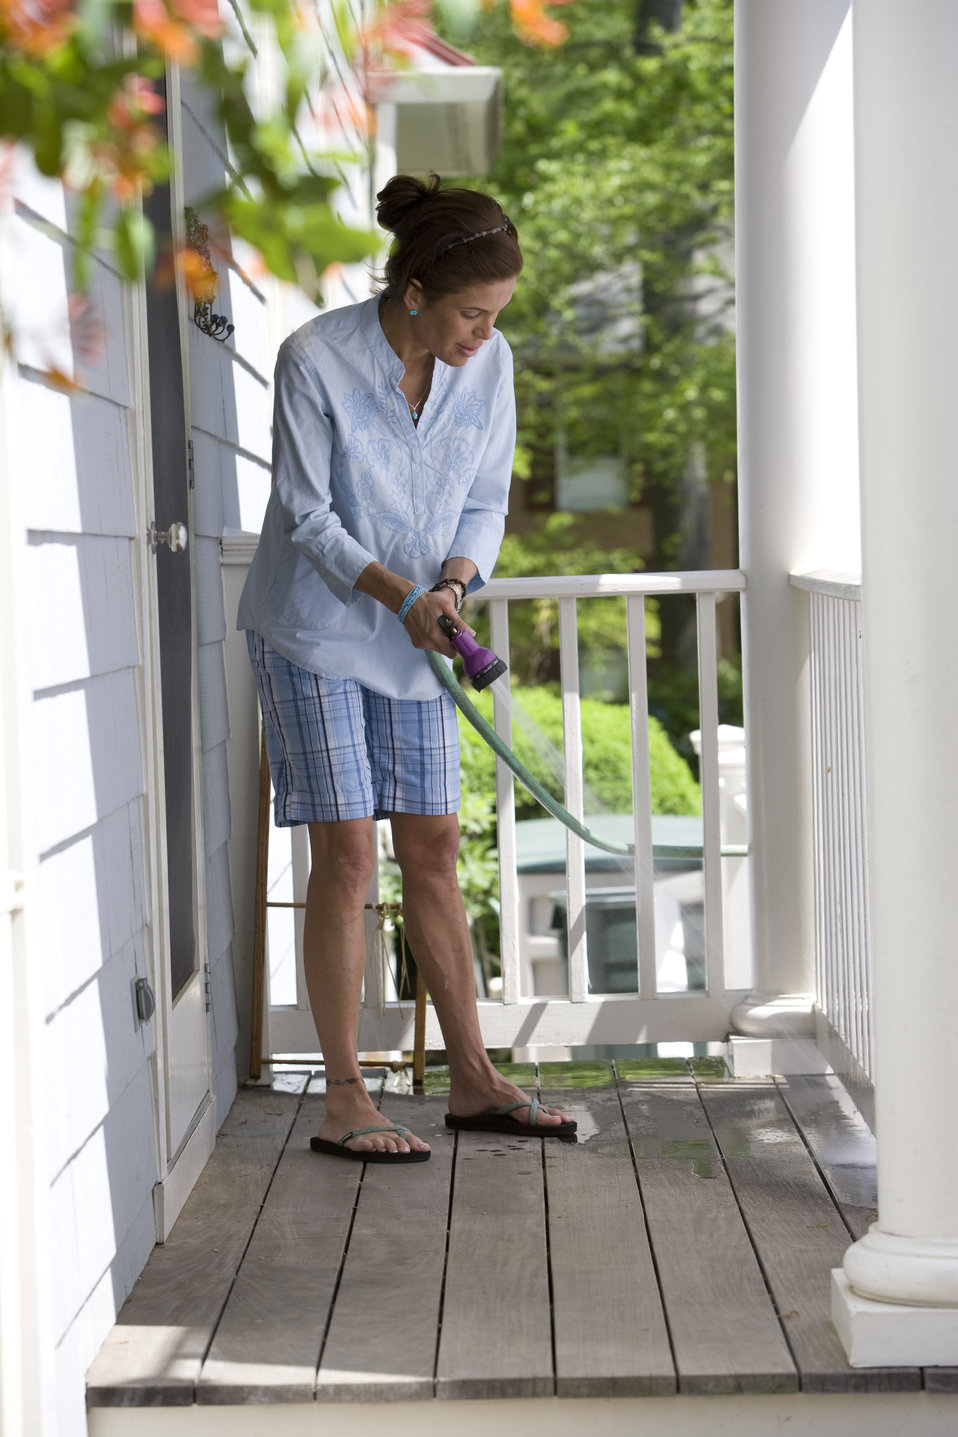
Home maintenance includes both the indoor, and as was the case here, outdoor environment, and is an ongoing process with which a homeowner need to keep up in order to provide for a healthy living space. Keeping your porch dust free reduces the amount of contaminants tracked into the house.